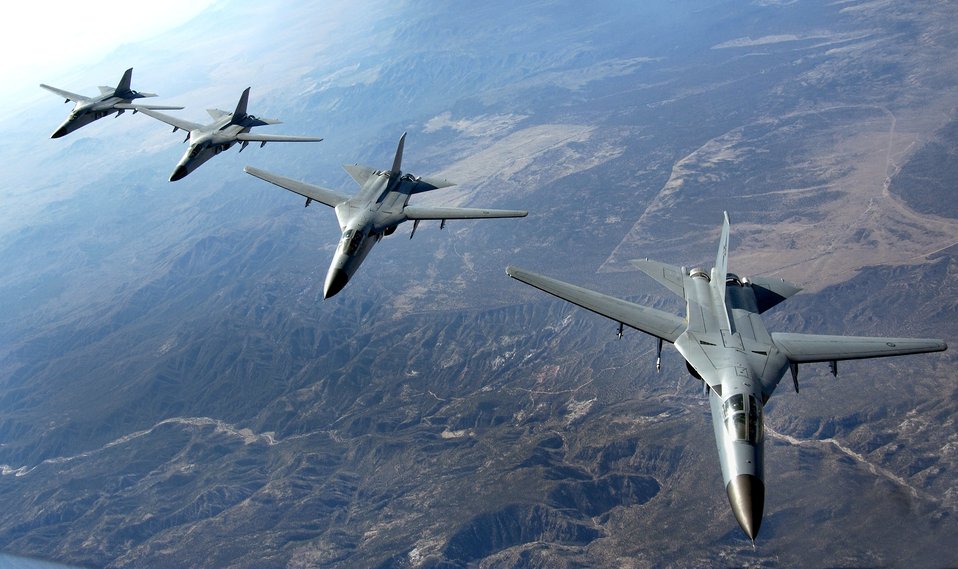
F-111s at Red Flag

NELLIS AIR FORCE BASE, Nev. (AFPN) -- A four-ship formation of Royal Australian Air Force F-111s flies to ranges here Feb. 14 during Red Flag 06-1. Red Flag tests aircrews' warfighting skills in realistic combat situations. The exercise involves more than 85 aircraft, flying missions day and night to the Nevada Test and Training Range. Along with the Air Force, units from the Army, Navy, Marine Corps, United Kingdom and Australia are participating in this Red Flag.